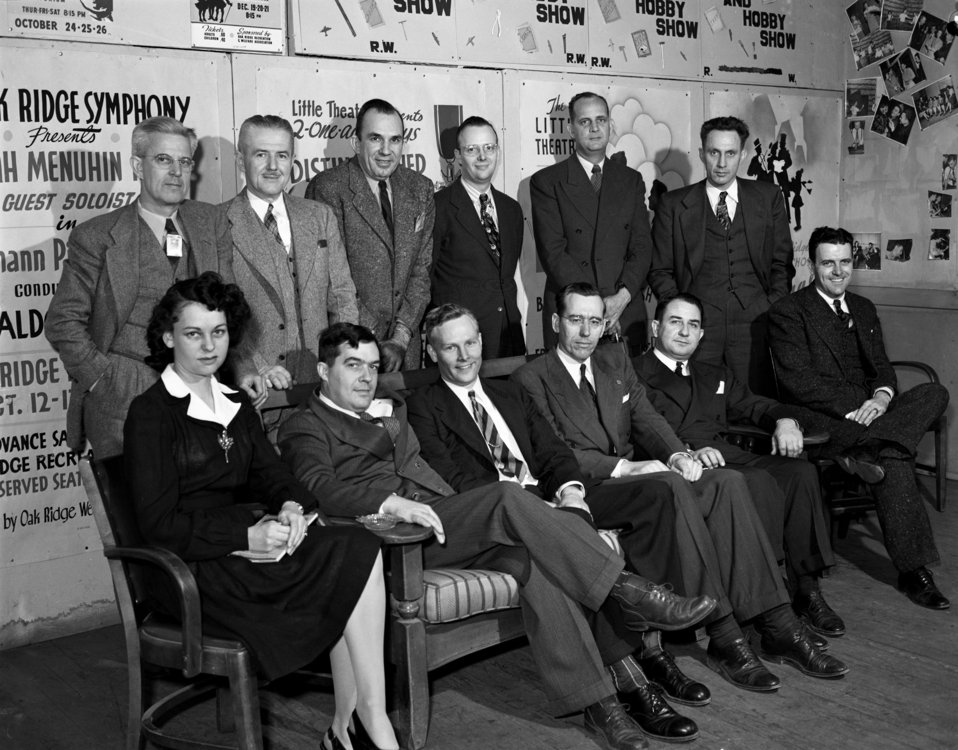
R and W Council Oak Ridge 1947

3292-2cpa DOE photo Ed Westcott 2-12-1947 Standing L to R H.R. Bishop, John D. Donovan, Swep T. Davis, Hally Harnick, J.E. Brock, W. Douglas Lavers seated L to R Daisy W. Jackson, Alfred W. Jackson, Alferd W. Folsom, Merlin D. Peterson, Richard D. Sheahan, T. William Rodes, and Robert P. Ellis Oak Ridge Tennessee